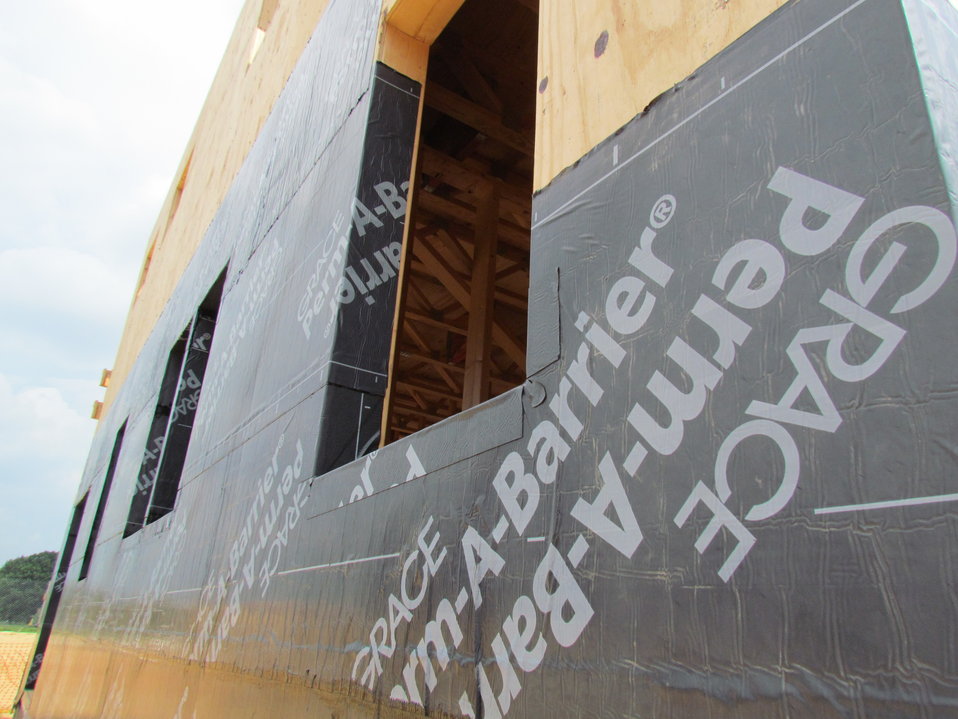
Net-Zero Energy Residential Test Facility - Photo showing detail of air/moisture barrier installation in window opening.